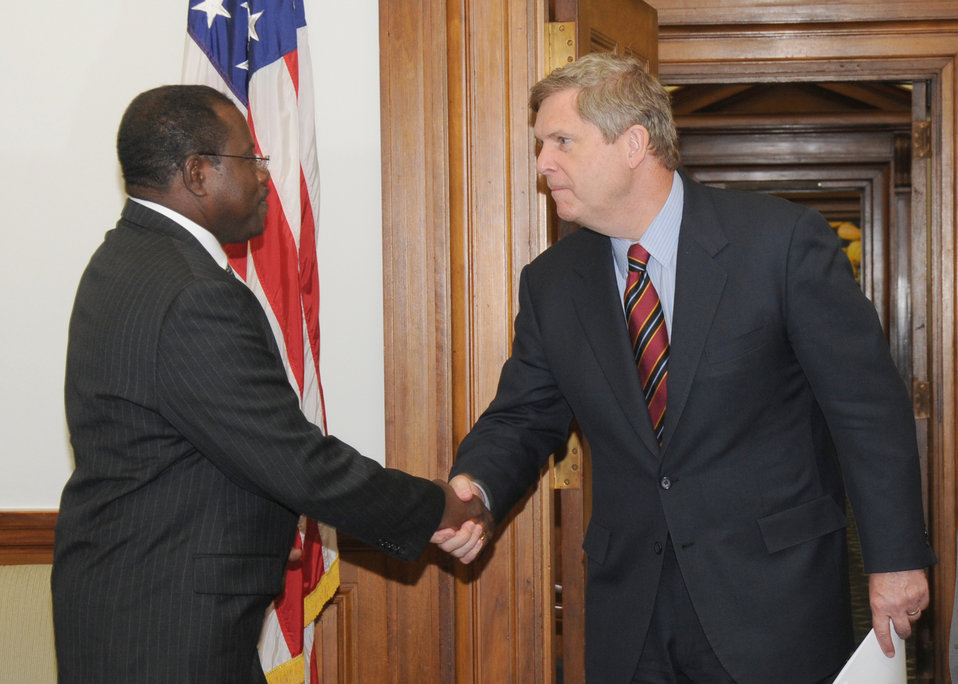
Agriculture Secretary Tom Vilsack greets Haitian Agricultural Minister Joanas Guèx on Thursday, April 15, 2010 at United States Department of Agriculture, Washington, D.C. USDA Photo 10di1313-06